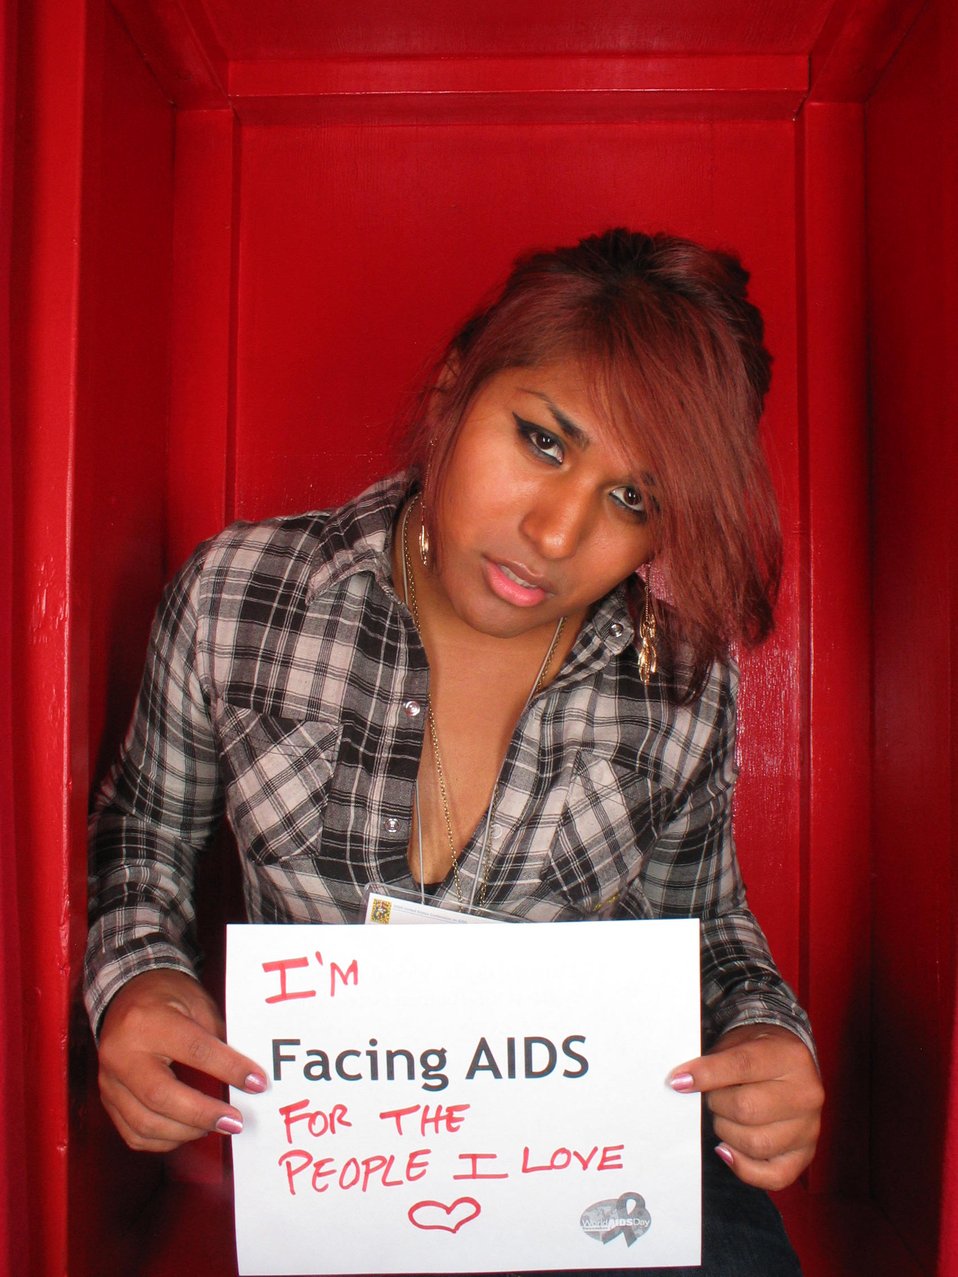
I'm Facing AIDS for the people I love.